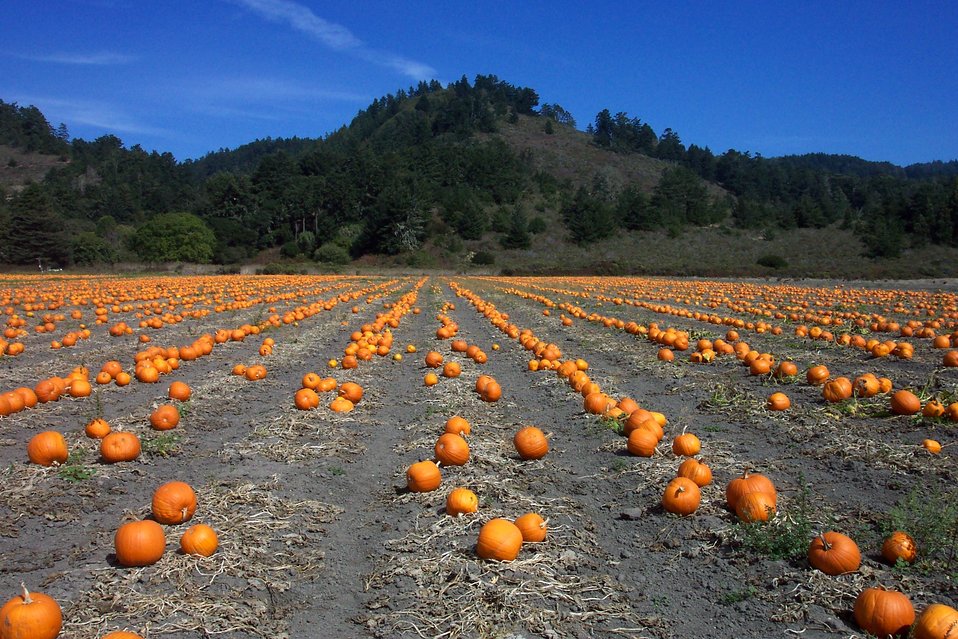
A pumpkin patch along Highway 1 north of Davenport.